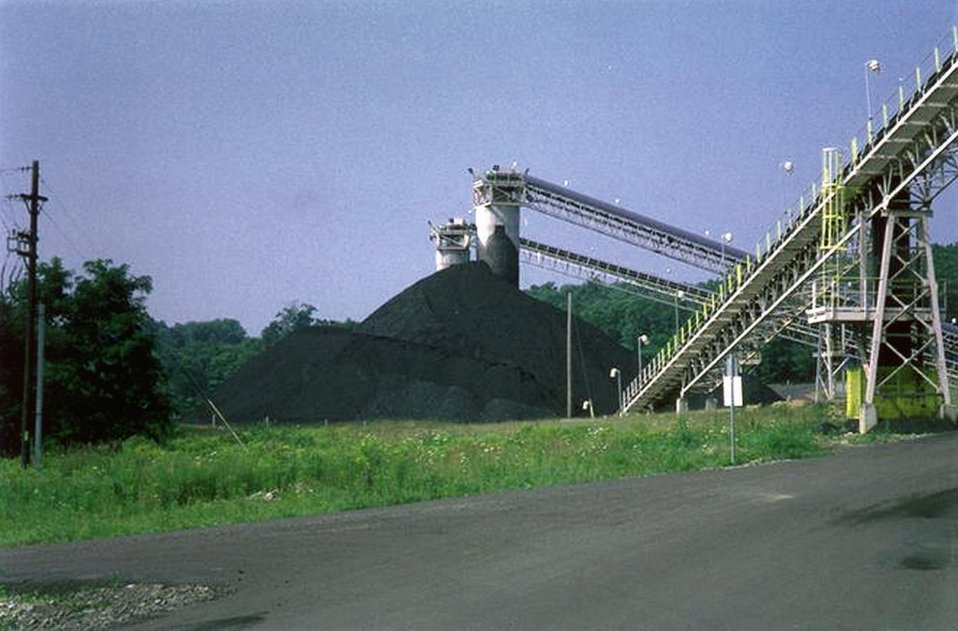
CLEAN COAL PILE USED AS FEEDER FOR A UNIT THAT CLEANS COAL OF SULFUR AND ASH BEFORE IT IS BURNED.